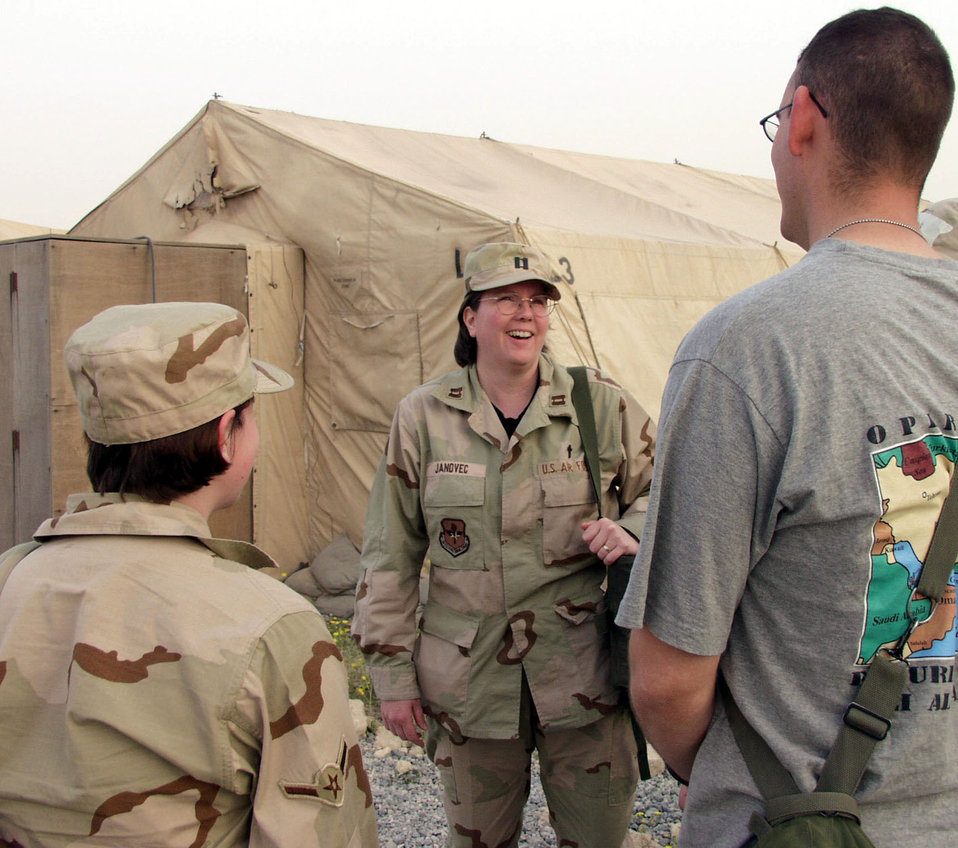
Deployed chaplains minister to warfighters

OPERATION SOUTHERN WATCH -- Chaplain (Capt.) Leslie Janovec, a Protestant chaplain assigned to the 386th Air Expeditionary Wing, visits tent city residents at her forward-deployed location in the Arabian Gulf region. Janovec recently deployed to the region from her home station at Lackland Air Force Base, Texas.